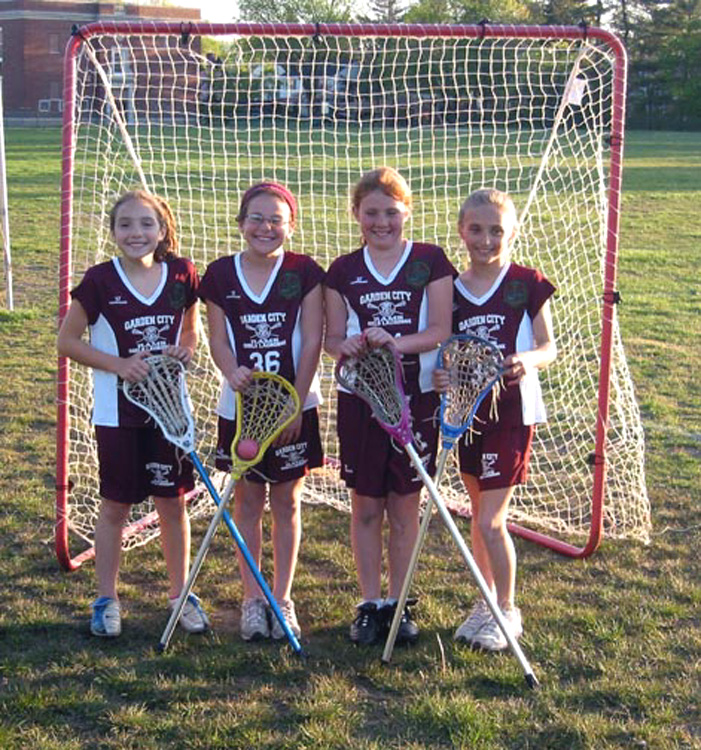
N.Y. lacrosse team dedicates season to Pope Airmen

Members of the Gray Sweeties, a youth lacrosse team in Garden City, N.Y., wear patches on their uniforms from the 43rd Logistics Readiness Squadron at Pope Air Force Base, N.C. The team has dedicated their season to the unit.